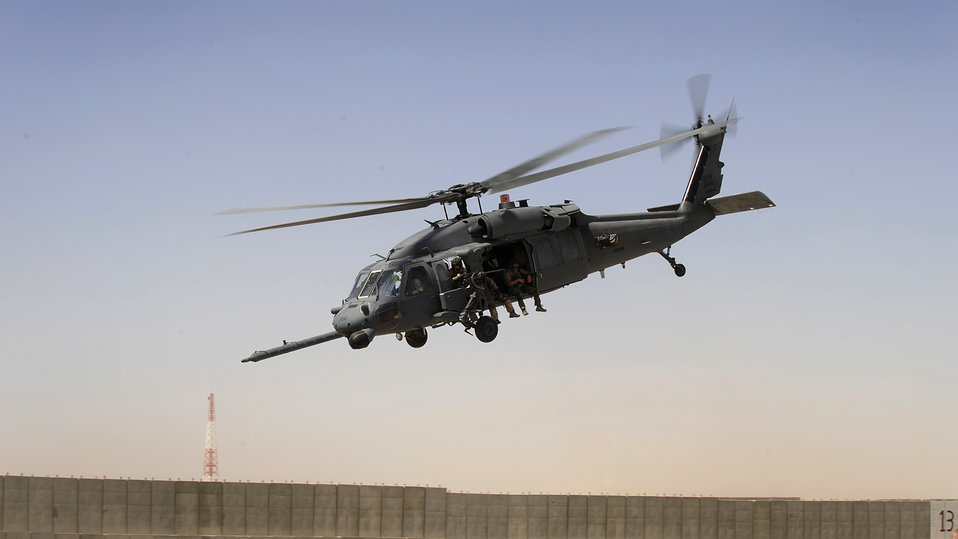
Aerial gunners provide cover for lifesaving mission

A HH-60G Pave Hawk, manned by Airmen assigned to the 129th Expeditionary Rescue Squadron, takes off June 23 from Camp Bastion, Afghanistan. The crew responded to a medical evacuation request to help injured personnel further down range.